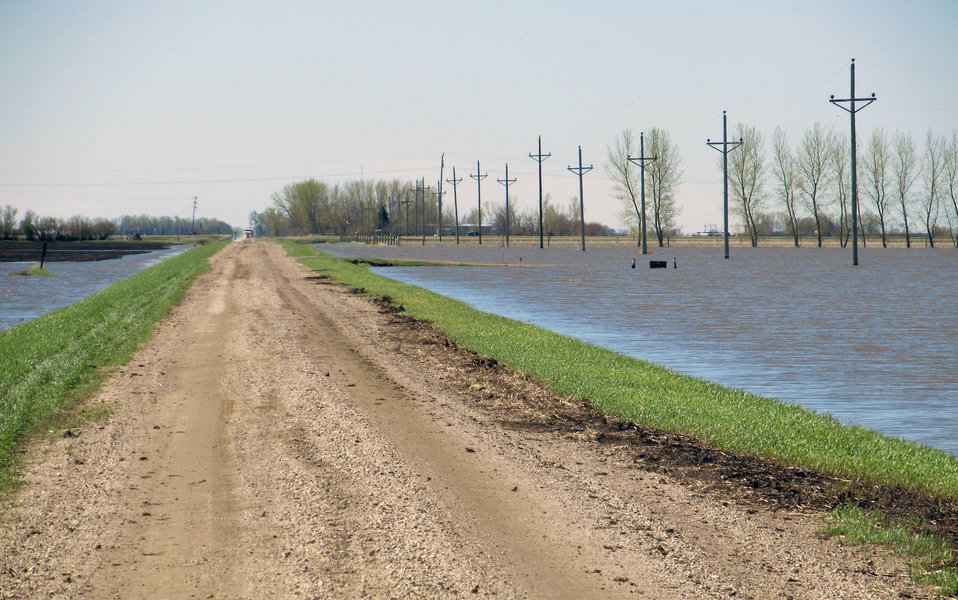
Flooding and water damage in the Park and Tongue River Watersheds located in Cavalier, Pembina and Cavalaier Counties in ND on Thursday, May 23, 2013.